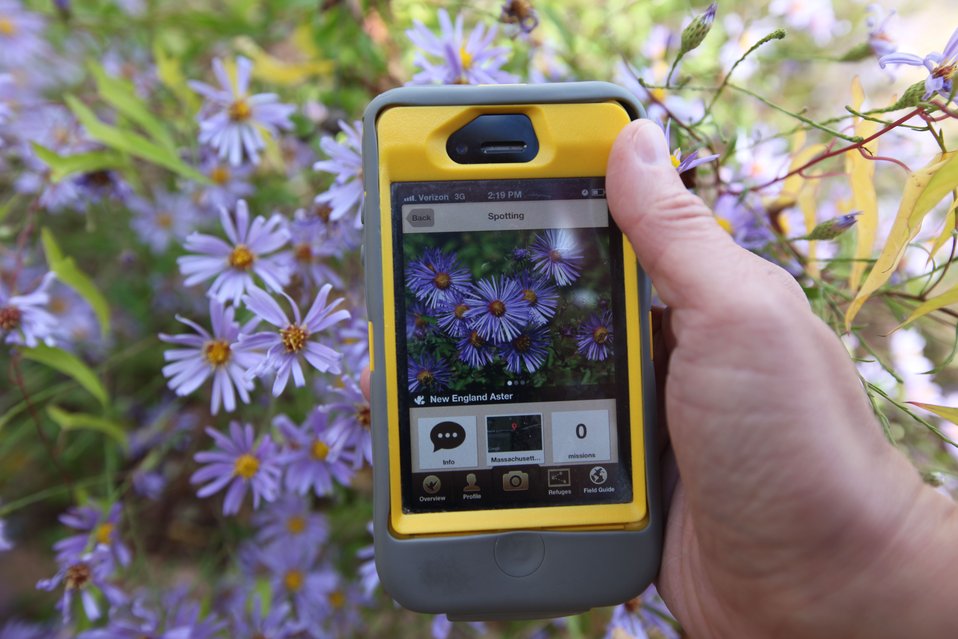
Chesapeake Bay app

An iPhone user uploads a photo of asters onto the new National Wildlife Refuges Chesapeake Bay app, a new tool for exploring the outdoors. (USFWS)